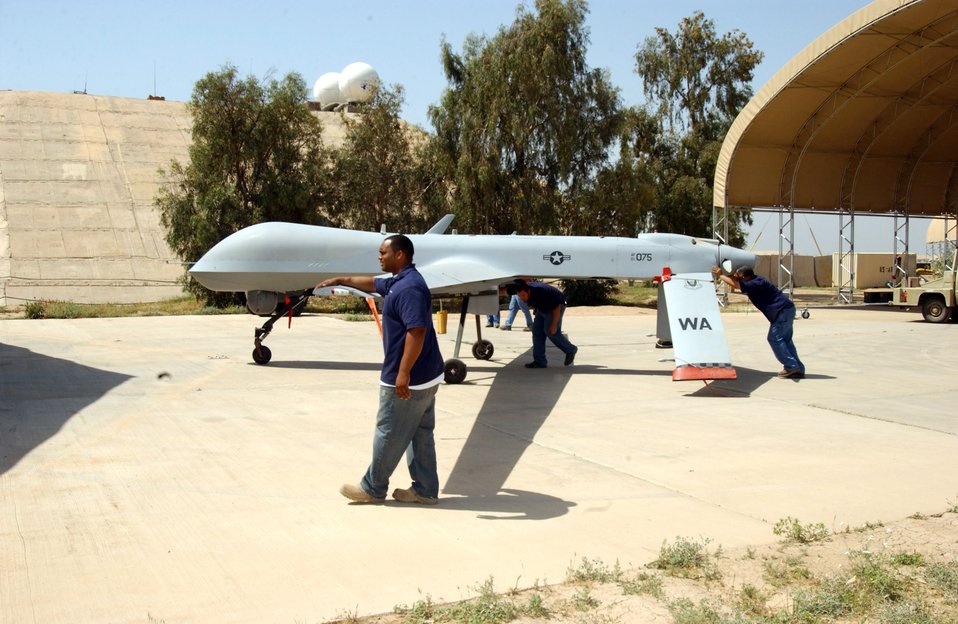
Predator maintenance team is 'total force'

Three contract maintainers walk an RQ-1 Predator unmanned aerial vehicle into a shelter. They are assigned to the 46th Expeditionary Aircraft Maintenance Unit at Balad Air Base, Iraq.